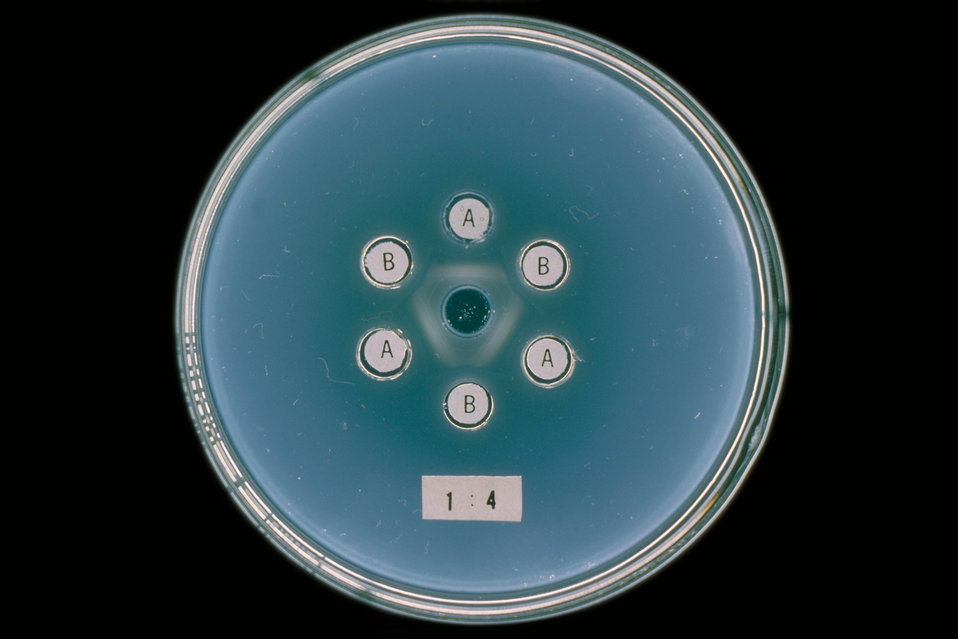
Agar gel reactions of Actinomyces sp., strains X-407 and X-573, with homologous antibodies A and B.